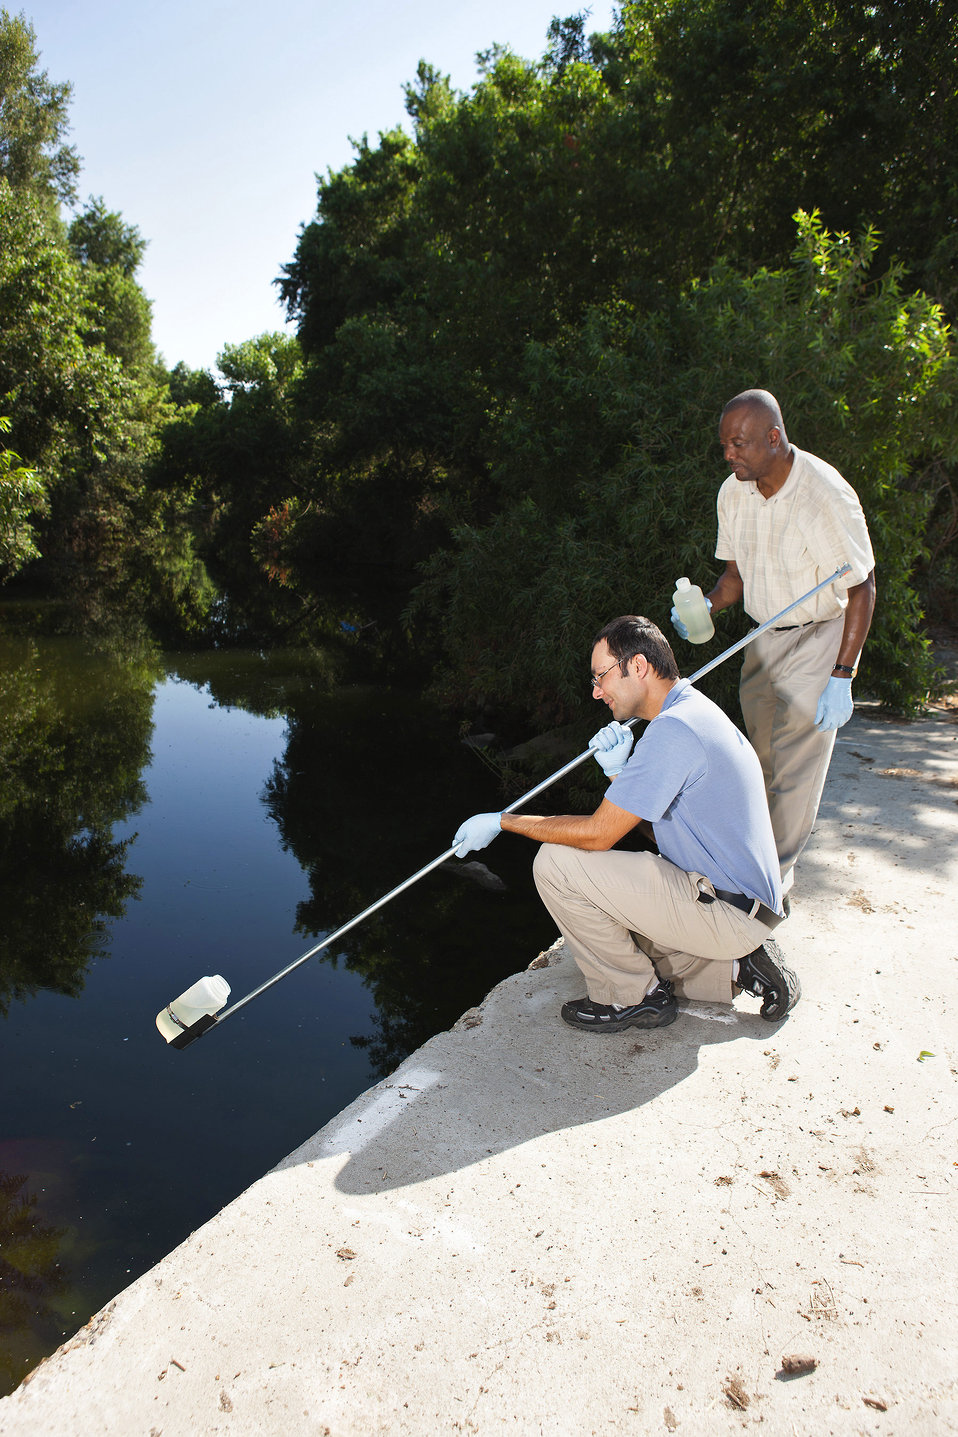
U.S. Department of Agriculture (USDA) Agriculture Research Service (ARS) technician Damon Baptista and microbiologist Mark Ibekwe collect a water sample from a creek that drains into the middle Santa Ana River Watershed, CA on Jan. 2, 2004. The scientists are studying how the thousands of surrounding dairies affect the creek’s water quality.